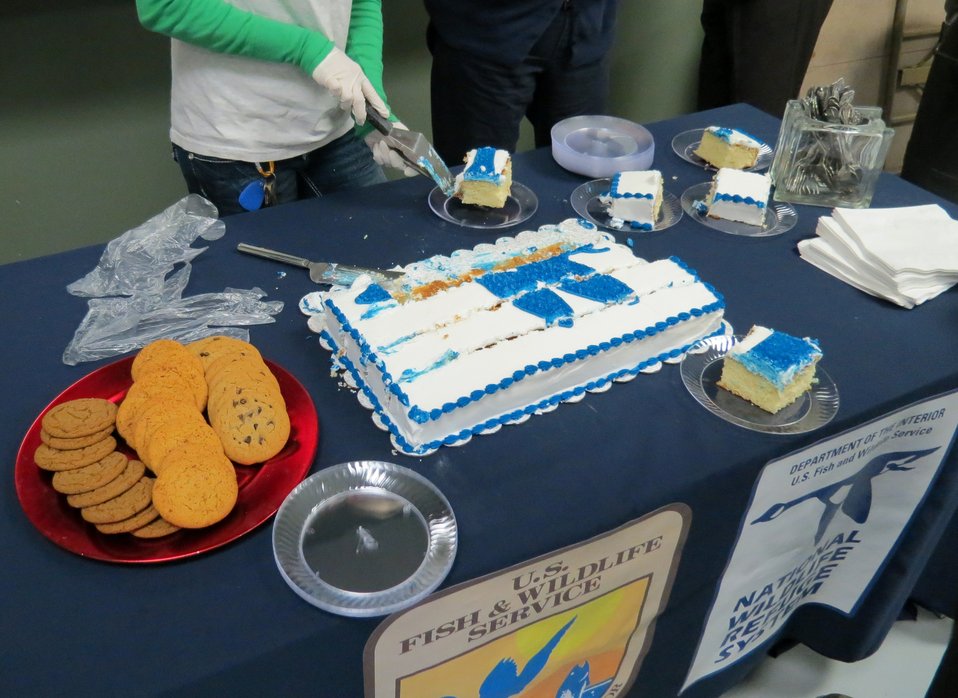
Take the Cake

The Friends of Port Louisa National Wildlife Refuge provided a delicious blue goose cake.